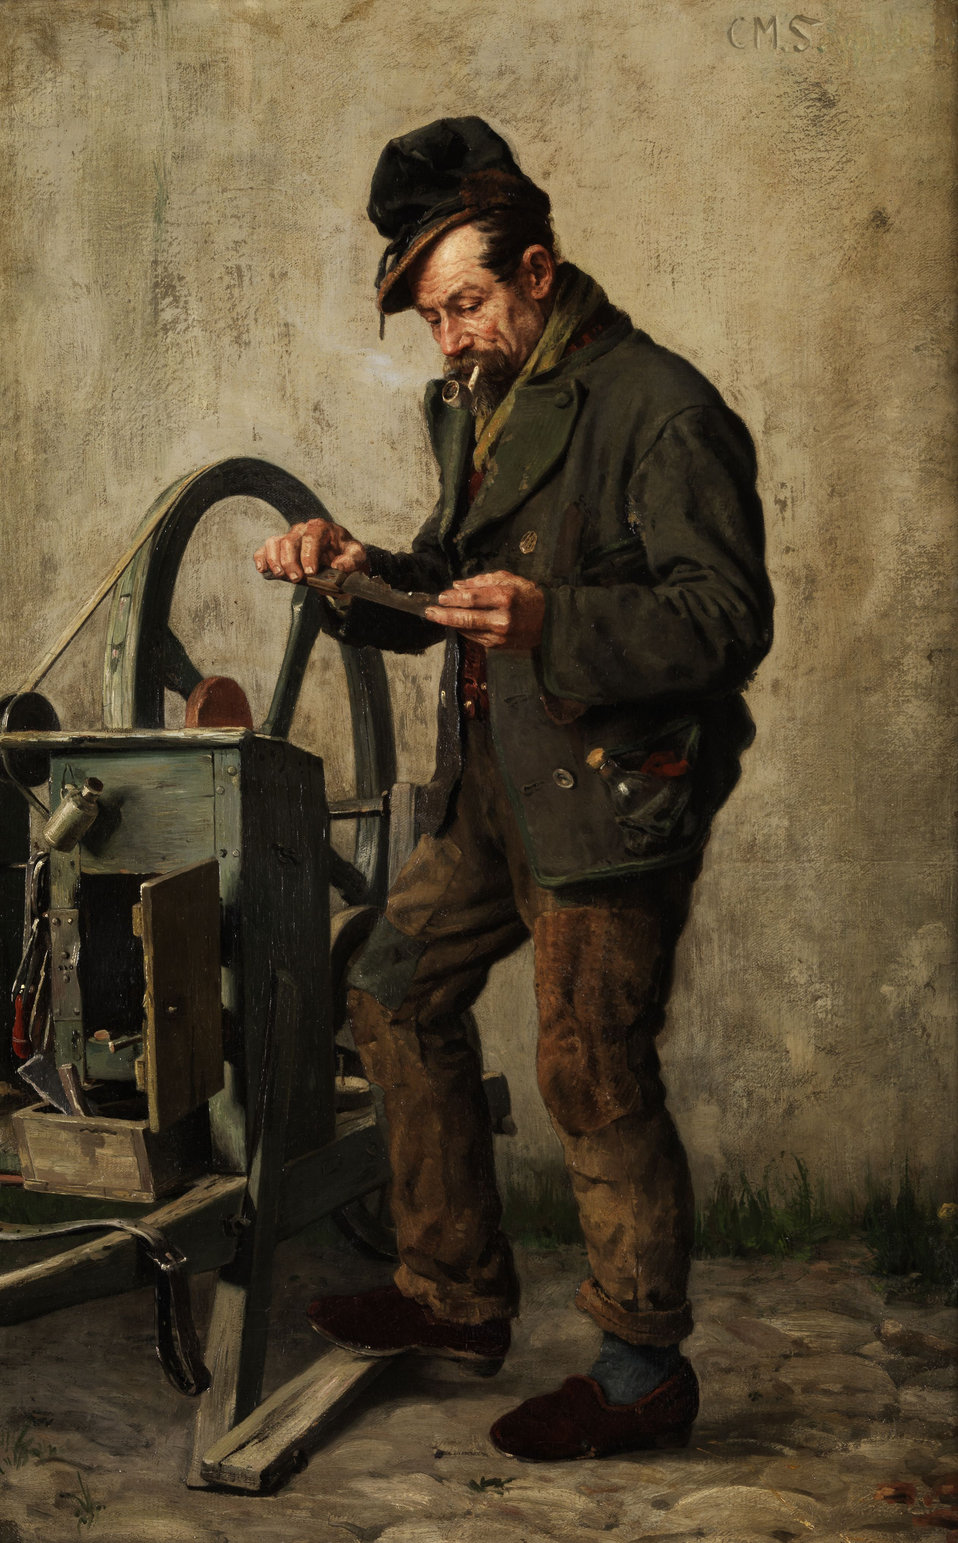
Der Messerschleifer. Öl auf Leinwand. 72,5 x 47 cm. Von Signatur noch Monogramm „C. M. S.“ übrig.